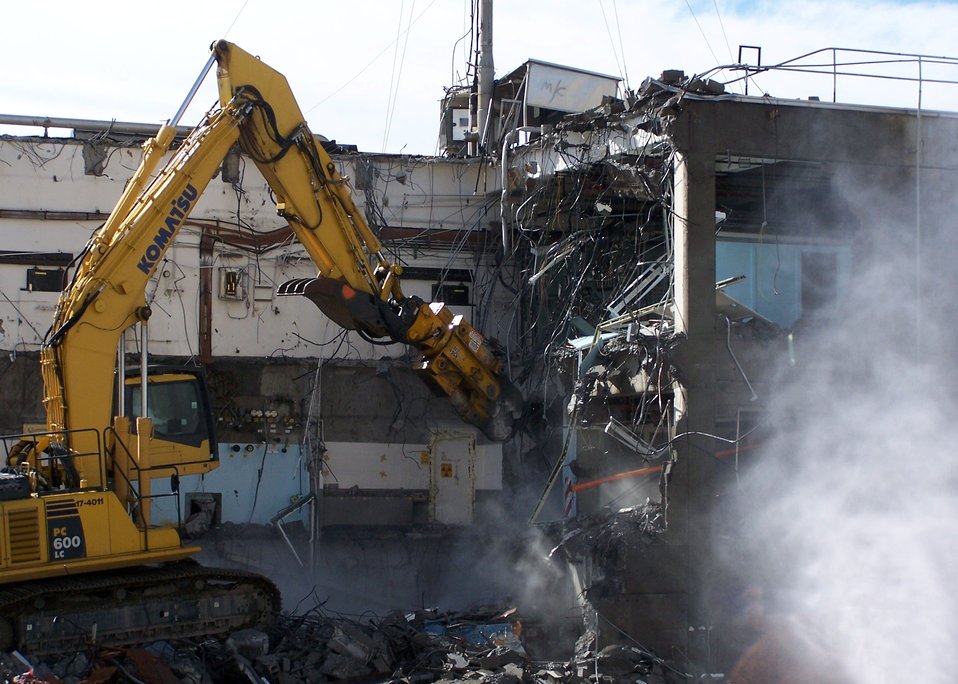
224-U demolition and stack removal

Workers demolish the 224-U facility, one of five ancillary facilities adjacent to Hanford’s U Plant.